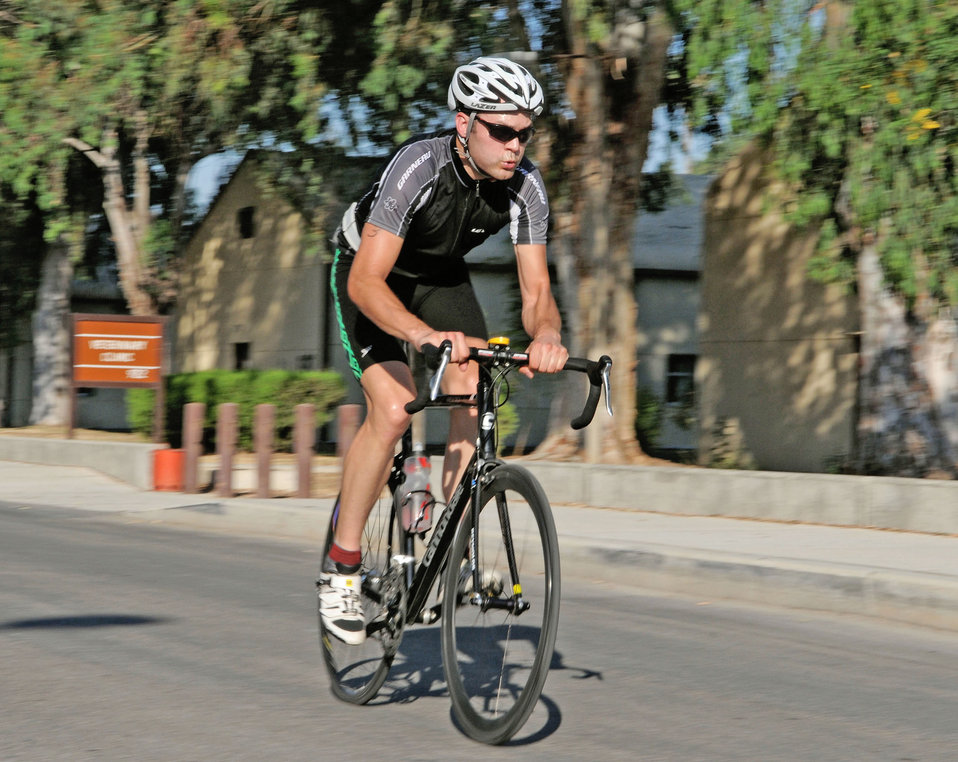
Incirlik Triathlon

Brian Jankowski, 90th Expeditionary Air Refueling Squadron, begins the biking portion of the Sprint Triathlon held recently at Incirlik Air Base, Turkey. Thirty-eight Airmen, civilians and family members participated in the competition. The triathlon added a twist to classic triathlon because the order of events was reversed, starting with the run, then the bike and swim instead of the classic swim, bike and run.